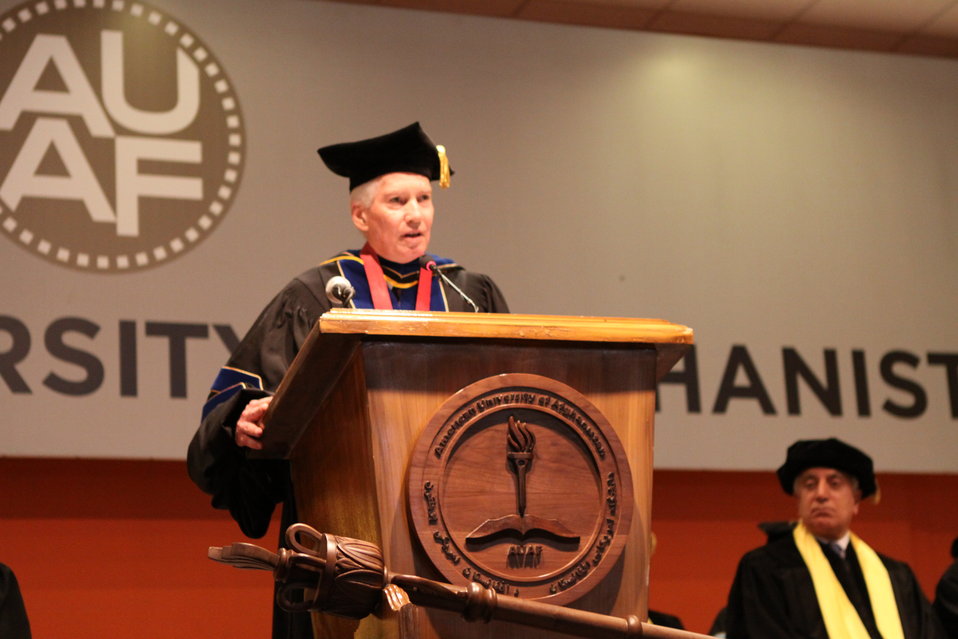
100526 AUAF Graduation 183